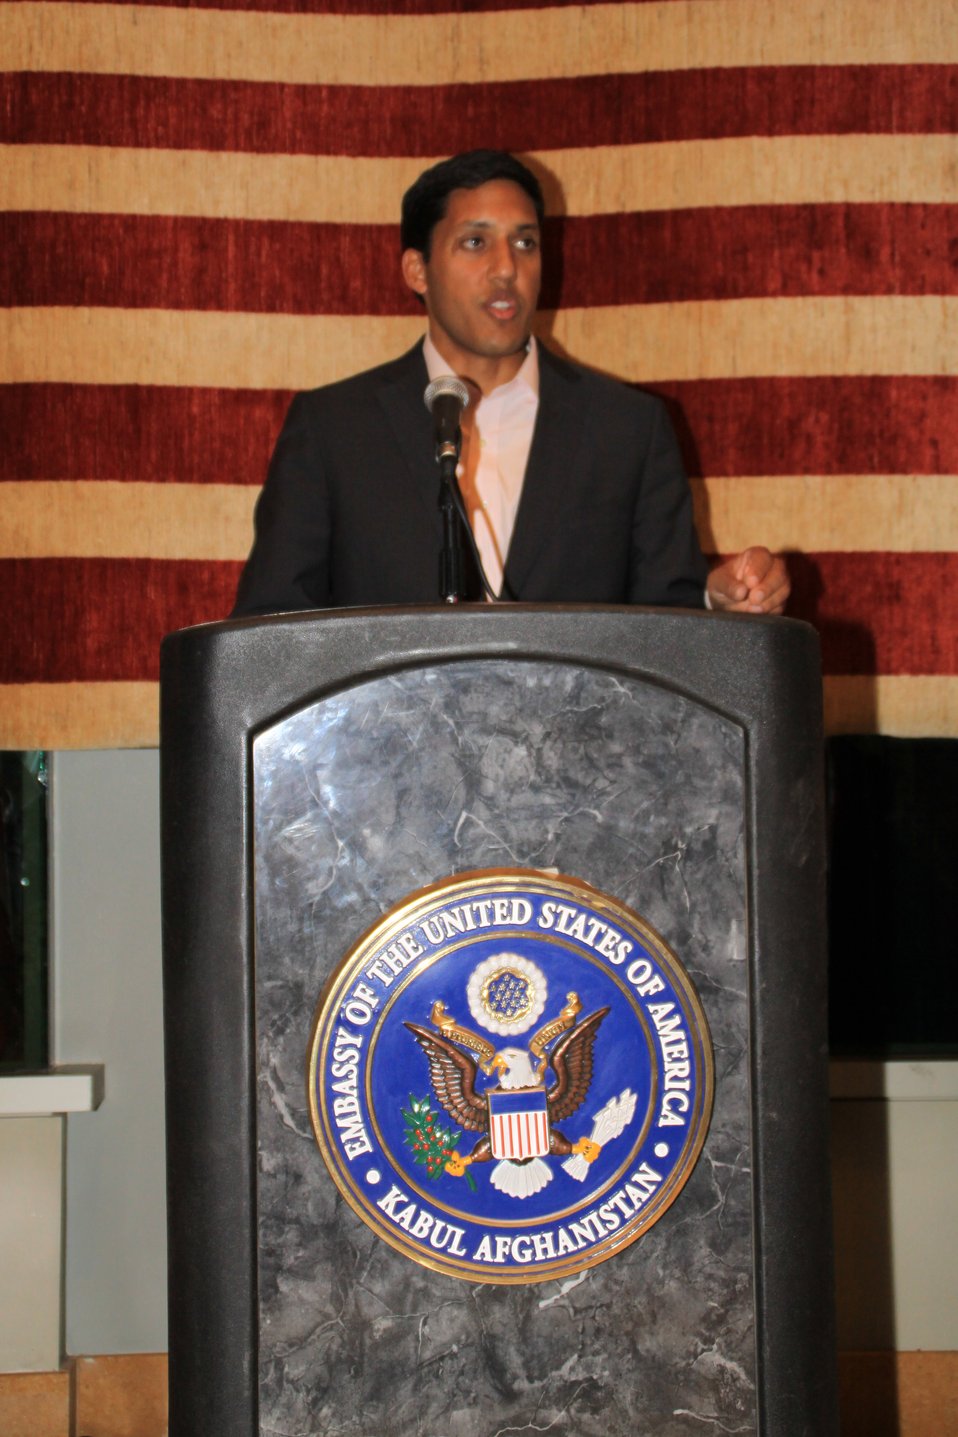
US Embassy Town Hall July 21, 2010